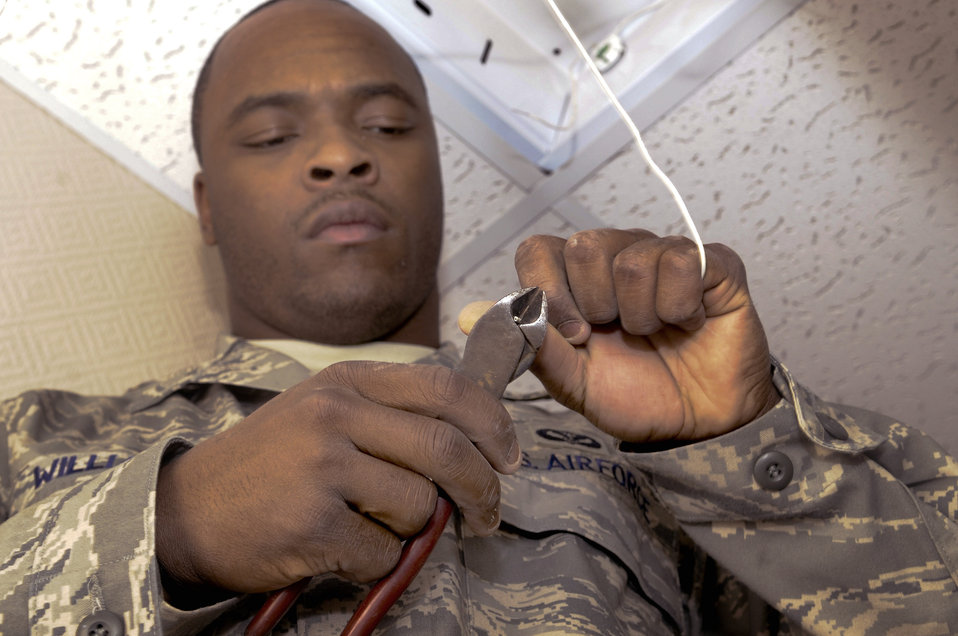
Airmen provide power to the people

Senior Airman Augustus Williams strips a wire from its protective coating in preparation to install a ballast in a light fixture Jan. 14 at an air base in Southwest Asia. Airman Williams is a 379th Expeditionary Civil Engineer Squadron electrician and deployed from Pope Air Force Base, N.C. He is a native of Augusta, Ga.